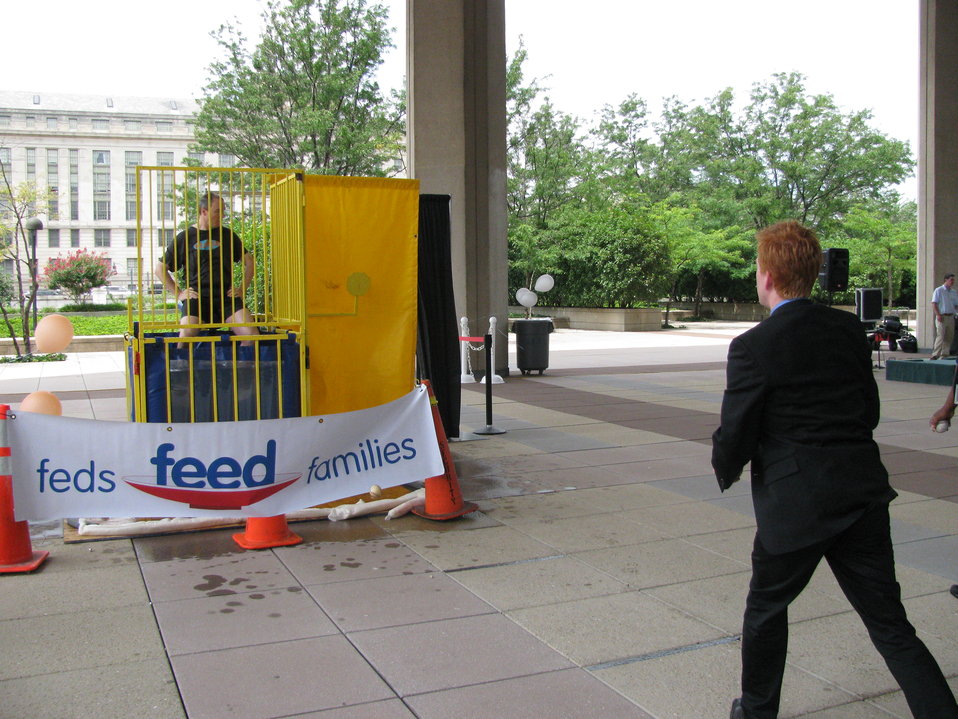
Clu lab pics 024